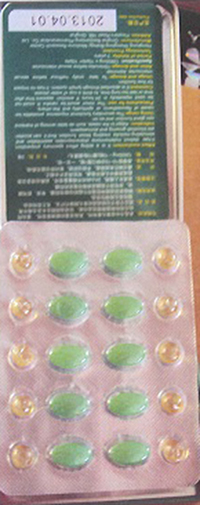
20140501163211496pic2 Page 3